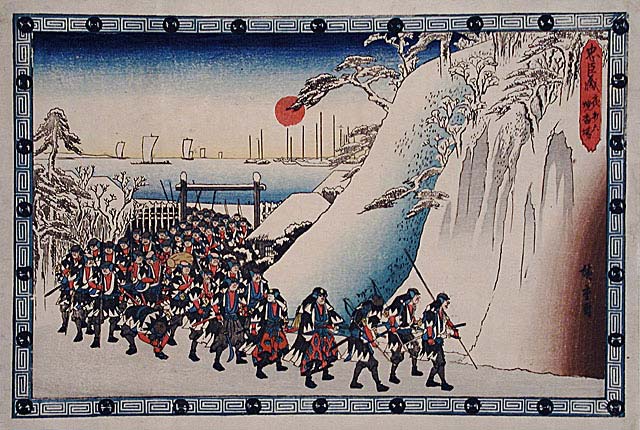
Act XI - 6º Episodio